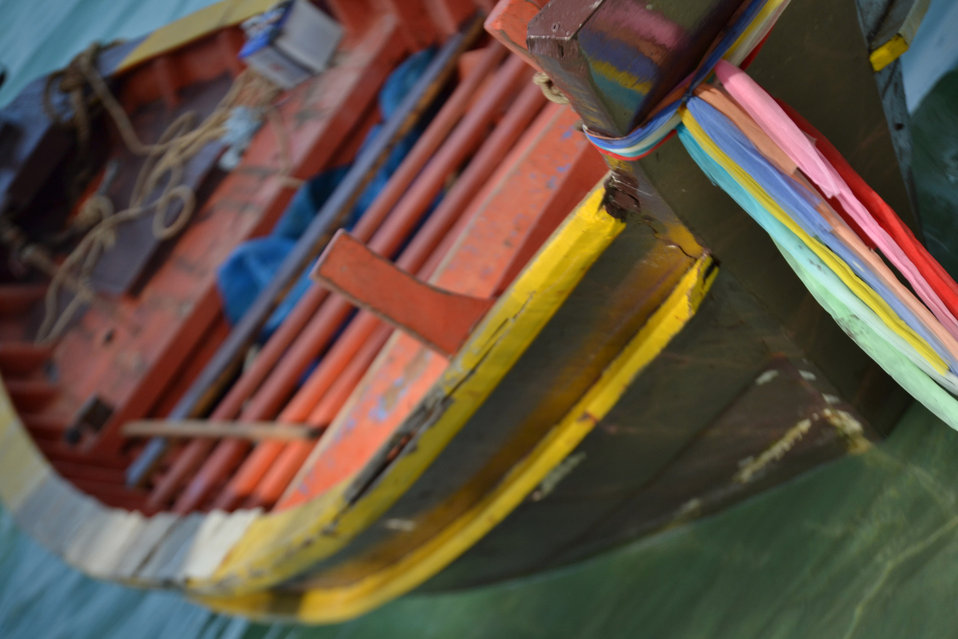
Boat

Colourful boat.